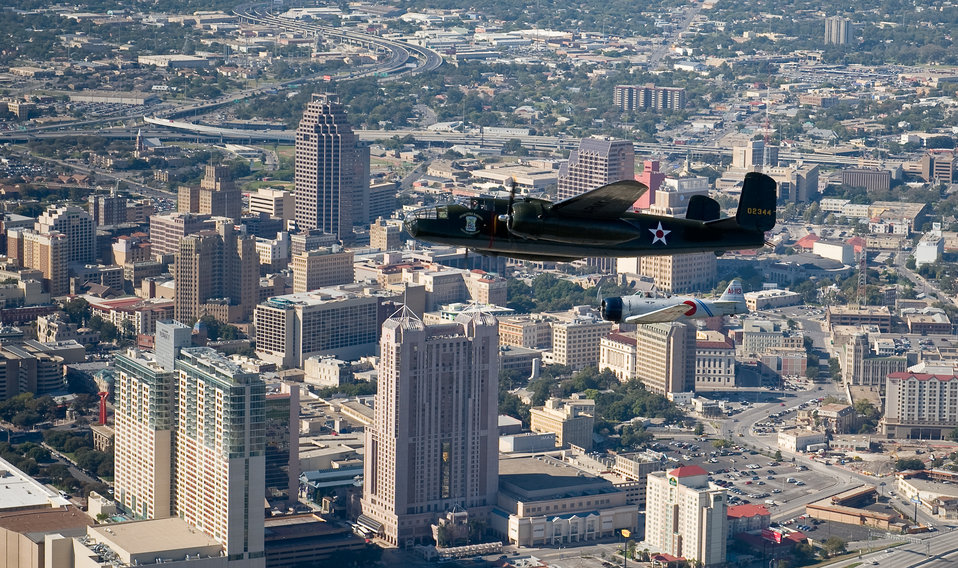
Warrior Flight